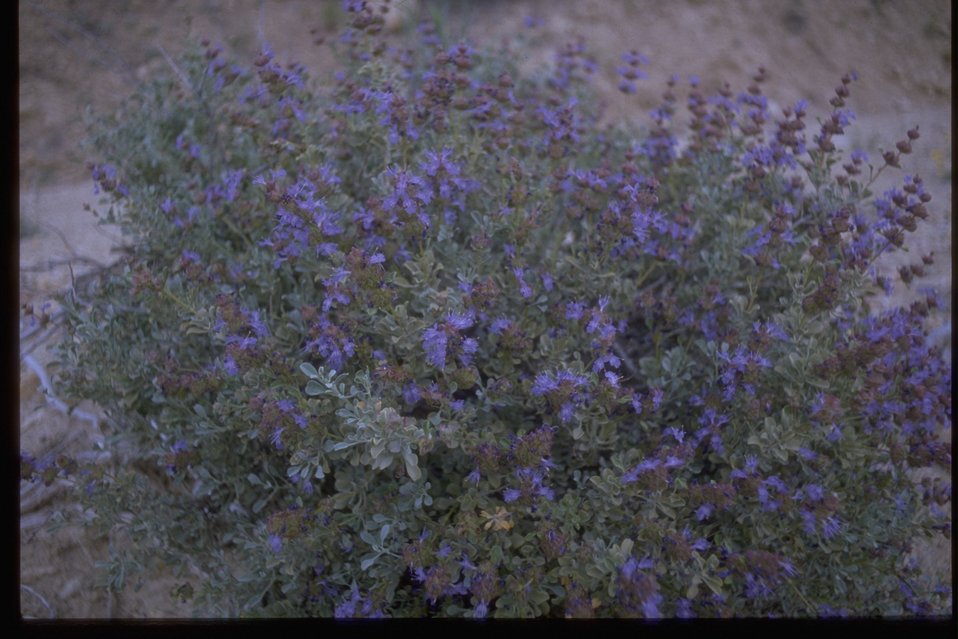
Salvia Dorrii.